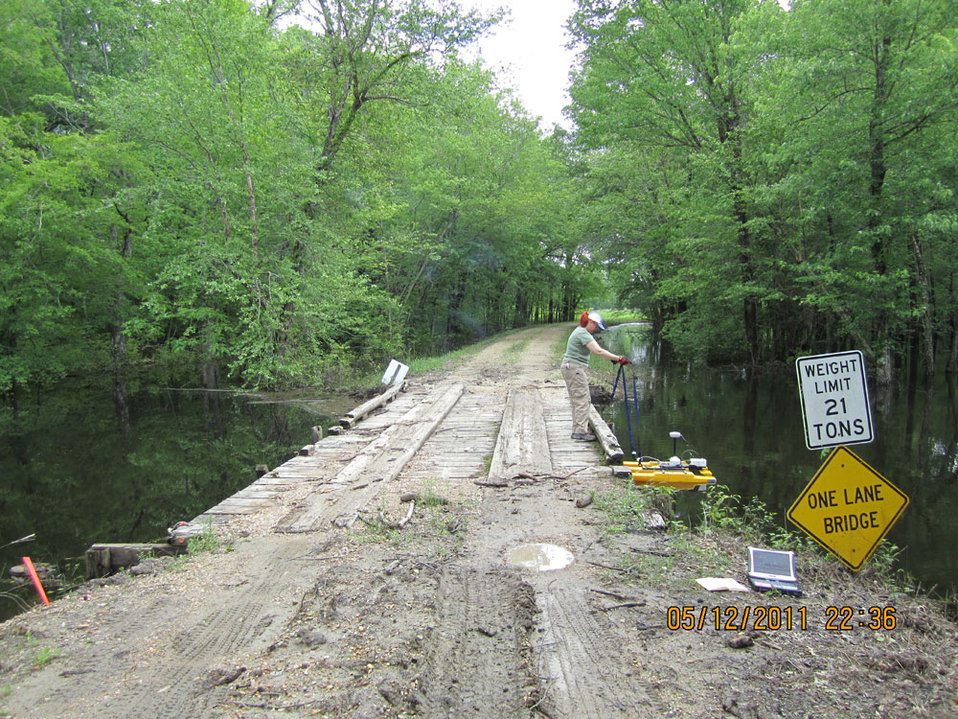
Dawn MacDonald, a Hydrologic Technician in Region 3, served in the Coast Guard.